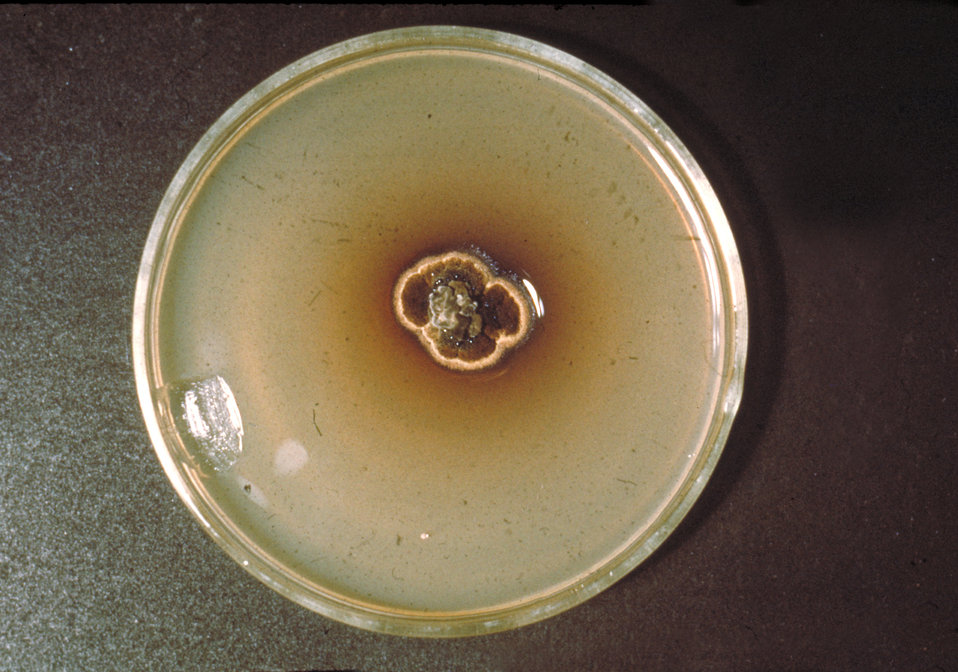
This is a plate culture growing the fungus Piedraia hortae.